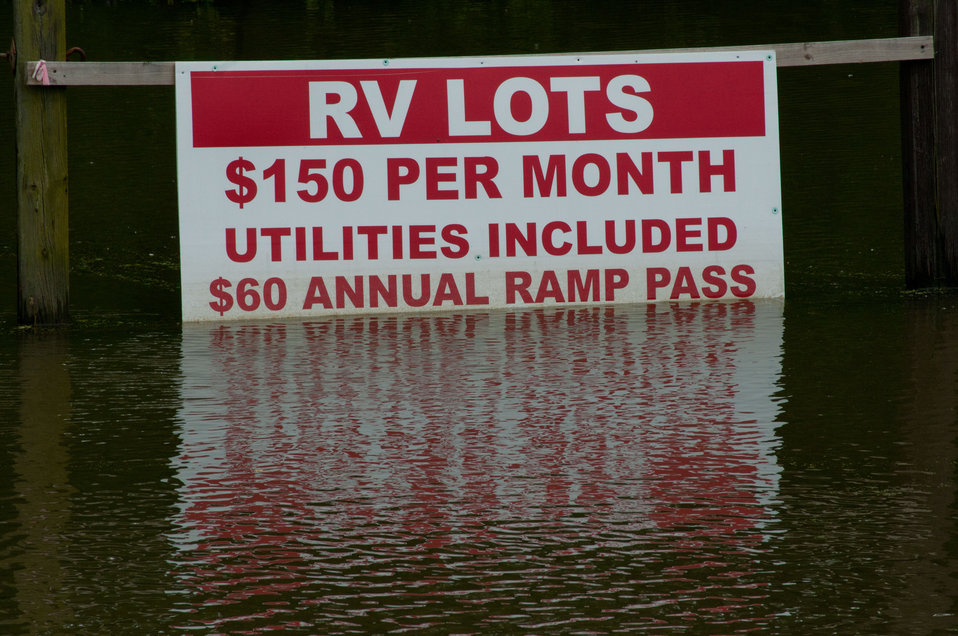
Floods waters from Mississippi River inundated Tunica Cutout, MS on Sunday, May 15. 2011. The entire population was relocated nearby to the protected side of the levee.